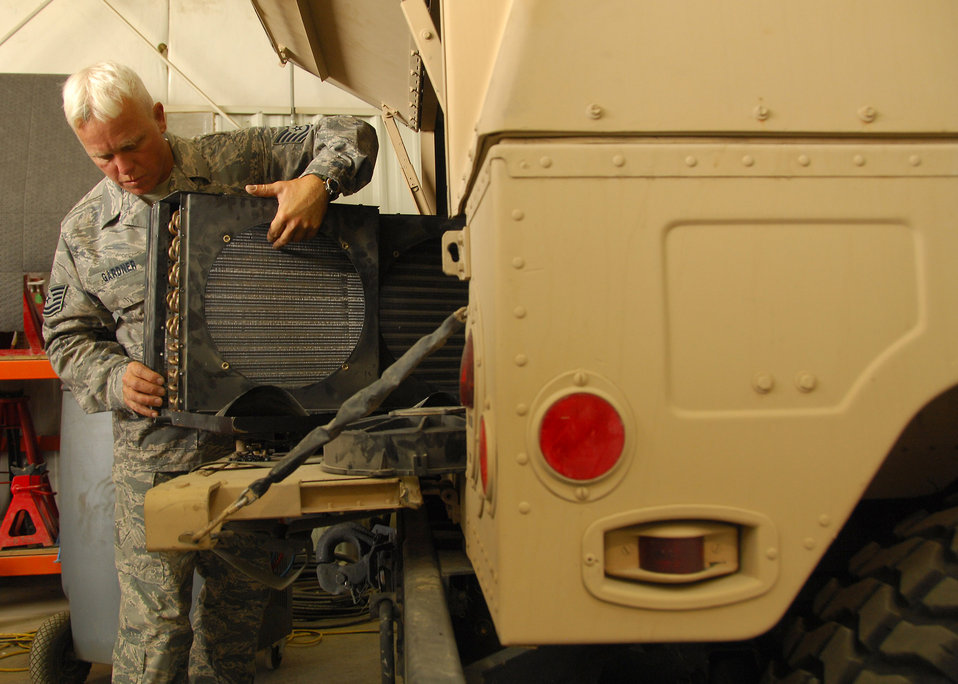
Humvee Modification

Tech. Sgt. Paul Gardner prepares to install a modified air-conditioning fan and condenser in a Humvee July 21 at a base in Southwest Asia. Sergeant Gardner is credited with the idea of modifying the unit because the Humvees were being brought in continuously for air-conditioning maintenance. He created a specially made L-shaped bracket for the assembly and replaced smaller mounting nut and bolt hardware with larger sizes. Sergeant Gardner is assigned to the 386th Expeditionary Logistics Readiness Squadron.